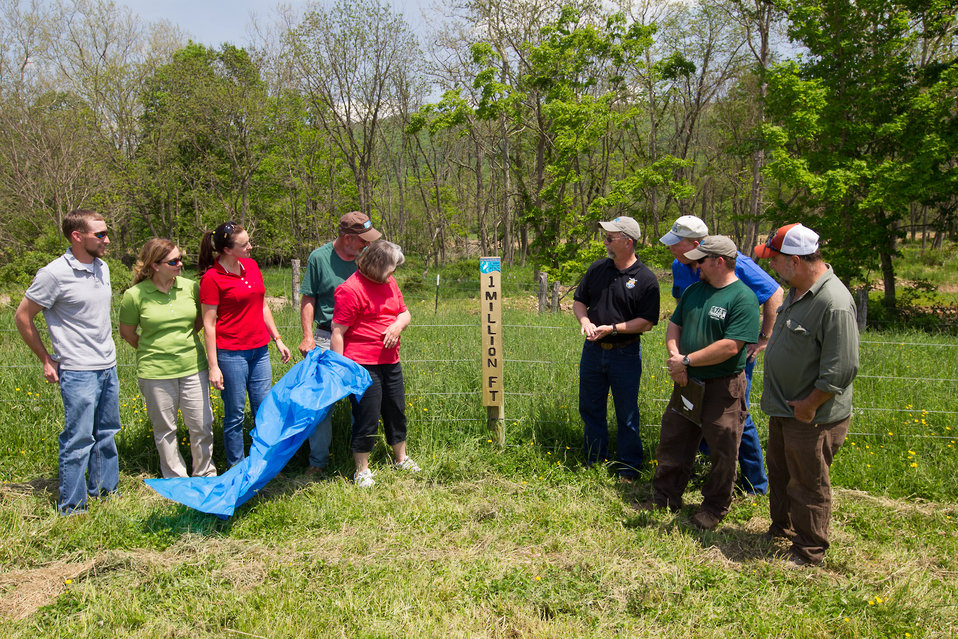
Celebrating 1 Million Feet of Conservation Fence in WV

Partners for Fish and Wildlife Program